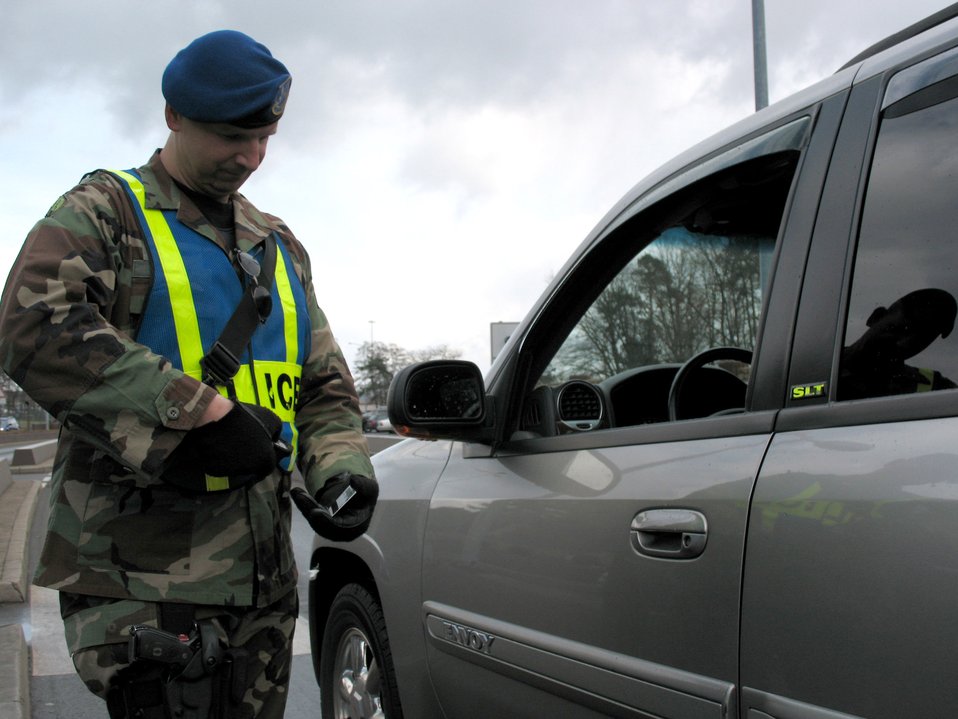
German ZPs invaluable asset at Ramstein

German civilian security police member, ZP-3 Oliver Kopp, checks an ID at the gate of Ramstein Air Base, Germany. With the high deployment rate of their military counterparts, the ZPs have stepped up to make sure there are no gaps in safeguarding security.